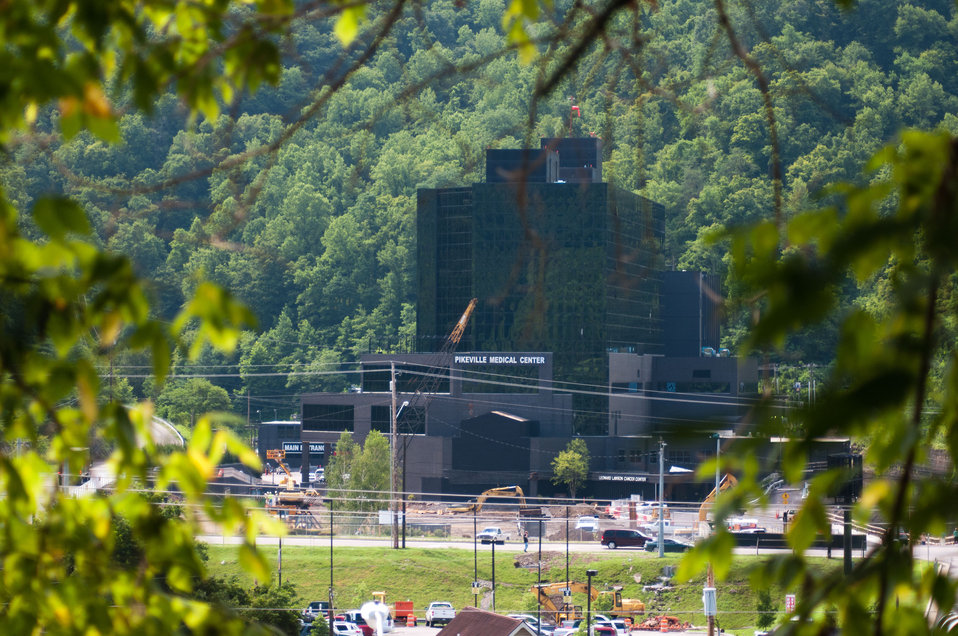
From across the horseshoe shaped town of Pikeville, KY, various buildings, parking lots, temporary walkways, and above ground construction of the Pikeville Medical Center (PMC) expansion project, on Tuesday, July 12, 2011, in Pikeville, KY. After months of infrastructure construction and rain delays, one of Kentucky’s largest American Recovery and Reinvestment Act (ARRA) projects is under way. The $44.6 million Community Facilities Loan will finance construction of a new medical office building and parking garage. The new medical office building will house outpatient surgery, endoscopy, surgical support and provide exam, waiting and office space for 23 primary and specialty care physicians. It also will contain a medical research center to support existing research – in conjunction with Pikeville College – on health disparities, genetic research related to the prevalence of cancer and other areas, including drug and treatment trials. The new parking garage with more than 1,000 spaces will be built adjacent to the new medical building, eliminating the need to shuttle patients back and forth from remote parking areas. The new garage will provide closer and easier proximity to medical and hospital services for all patients.
Wayne Rutherford, County Judge-Executive for Pike County, says funding from ARRA is a boon for his county because it will create jobs.

“This is great for Pike County’s economy. We know we have a great hospital, and with this support, it will be even better,” said Rutherford. “The unemployment rate here is above the state average and this will stimulate jobs. There will be construction, which means lots of jobs on the front end – and even more once it is built.”

Pike County is one of Kentucky’s persistent poverty counties and the current medical facility provides health care services for a rural population of more than 68,000. This project will create 1,430 direct and indirect construction jobs, in addition to 97 long-term jobs. It is scheduled to be completed in December 2012.

“This project is a prime example of the ARRA monies being utilized for much-needed health care facility expansion in an economically-depressed region of Eastern Kentucky and Appalachia,” said Tom Fern, State Director for Rural Development in Kentucky. “This hospital has received national recognition for its quality of care, and this money will allow them to expand and build upon their success and continue providing quality health care services to the region.”

PMC was named National Hospital of the Year by the American Alliance of Healthcare Providers in November 2009. The hospital was among 400 elite health care facilities to apply for this prestigious honor. To earn this recognition, PMC competed against more than 400 hospitals, including the Mayo Clinic, the John Hopkins Hospital, Cedar-Sinai Medical Center, the Cleveland Clinic, Duke University Medical Center and Vanderbilt University.

Pikeville City Manager Donovan Blackburn said the medical center is the largest employer in Pikeville and contributes nearly $2 million to the city through the payment of occupational taxes. He went on to say that Pikeville Medical’s success is also the city’s success because as other cities struggle with dwindling revenues, Pikeville has actually seen growth.

“This is a regional medical center that is very important to the city. Pikeville is a legal, financial and education hub for Eastern Kentucky and a gateway to rural communities in Virginia and West Virginia. There are half a million within a 50-mile radius – so it’s not just local people that depend on this facility,” said Blackburn. “From a regional standpoint it adds volume from a jobs standpoint. Everybody in this county knows someone or has family that works for Pikeville Medical Center.
“People in this area used to have to go out of the area for good jobs and quality medical services, but Pikeville Medical has changed that,” added Blackburn. 'And it has impact on other parts of the city’s economy – hotels, restaurants and retail. It increases the quality of life tenfold.”

The Recovery Act was designed to spend money gradually over time in order to sustain a true recovery – with peak spending to occur early this year. While the experts agree that ARRA is already responsible for creating or saving approximately two million jobs, about 75 percent of recipients that reported on their Recover Act spending indicated their projects are less than half complete, meaning there is even more job impact from those dollars to come.